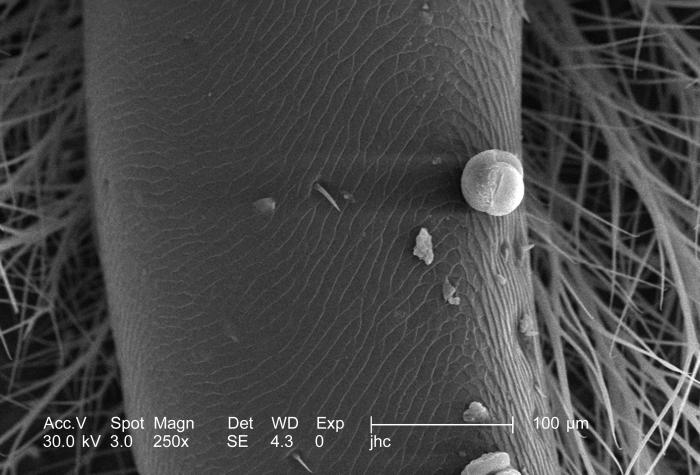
Under a relatively low magnification of only 250x, this scanning electron micrograph (SEM) depicted some of the ultrastructural morphologic features displayed on the surface of a carpenter bee's, Xylocopa virginica head. This particular bee was found deceased on the grounds of the Decatur, Georgia suburbs, an area where these insects are quite common. Carpenter bees can be quite a nuisance, for they are well known as wood-borers, and can create many unsightly holes in a home's wooden components.